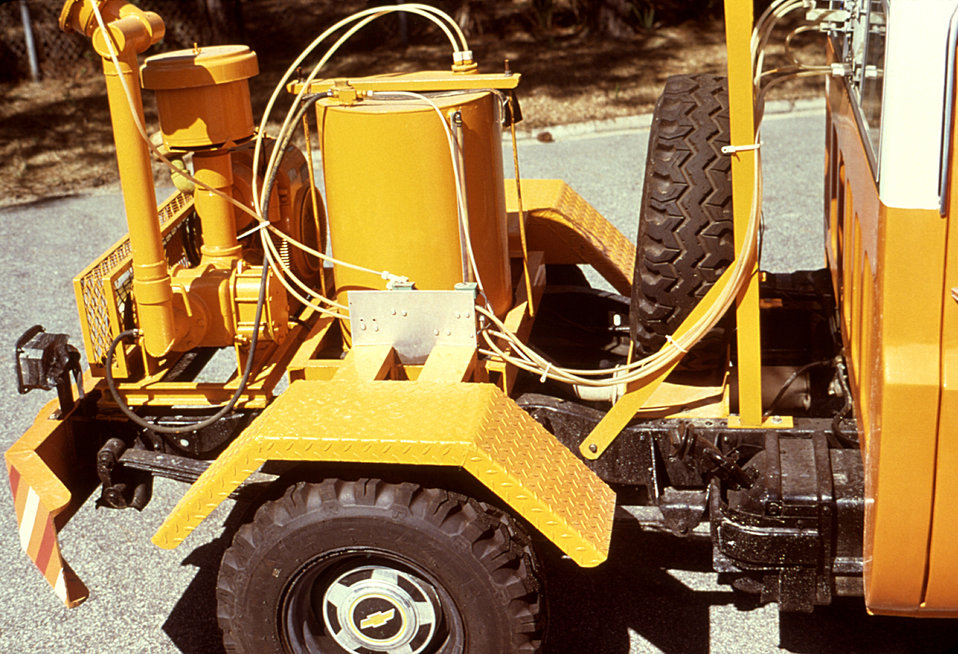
This 1976 image depicts a truck-mounted LECO-HD ULV (ultra-low volume) non-thermal fog generator, located in Chatham, Co. Georgia.